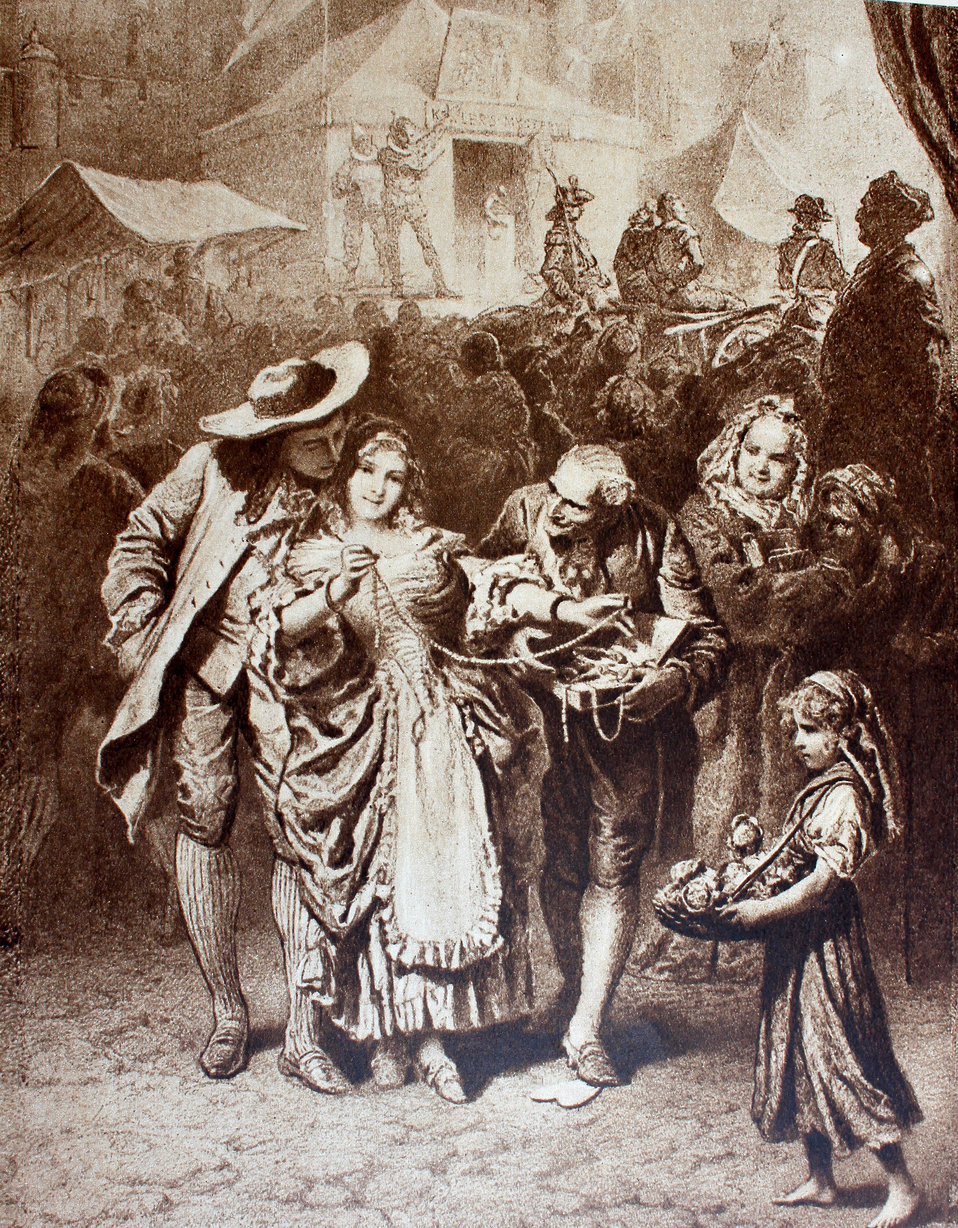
Fran√ßais†: 'La trag√©die de l`homme', de Imre Mad√°ch, illustr√©e par Mih√°ly Zichy